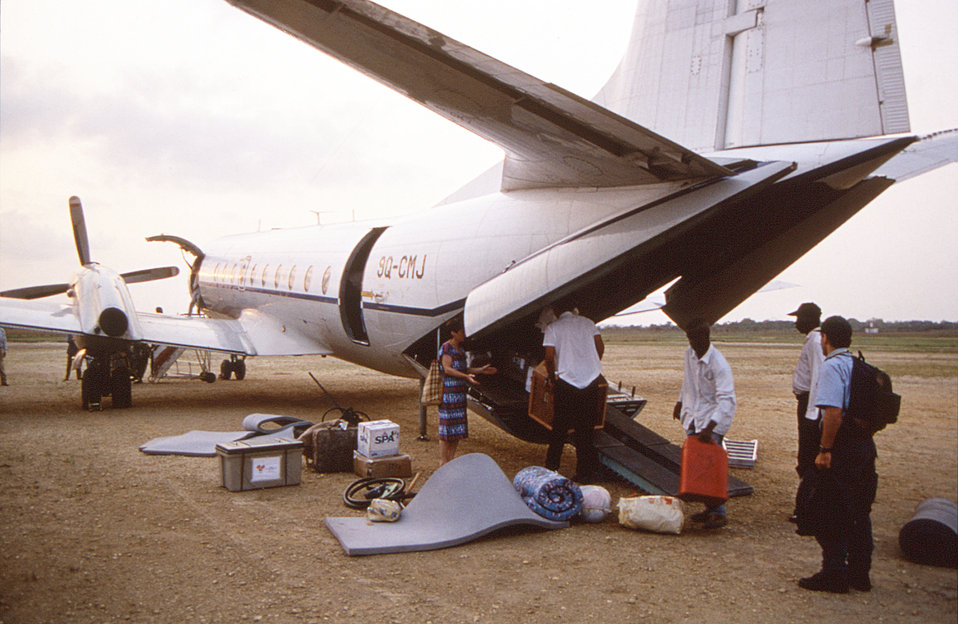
This image was created during an investigation into an outbreak of monkeypox, which took place in the Democratic Republic of the Congo (DRC), 1996 to 1997, formerly Zaire. Pictured here, during their study, was the epidemiologic team after having landed at Lodja Airport (LJA).